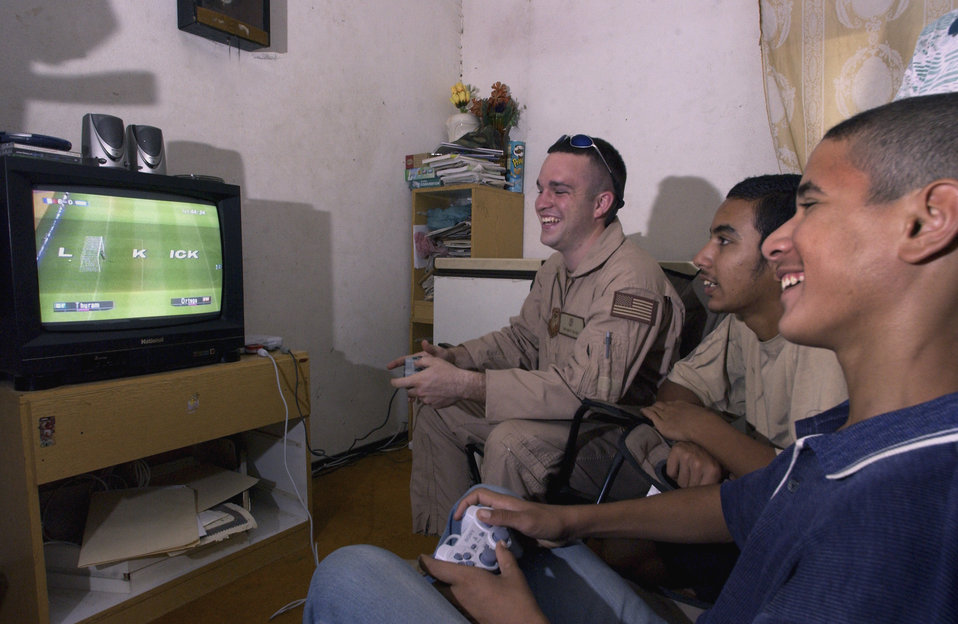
Medical visit

FRENCH VILLAGE, Iraq -- Senior Airman Matt Read (left) plays a Sony Play Station soccer game with 15-year-old Ahmed (right) and his brother Kaffar. Ahmed beat Read, 7-0. Read readily agreed to a rematch the next time the medics come to the village. The airman is a medical technician with the 447th Expeditionary Rescue Squadron.